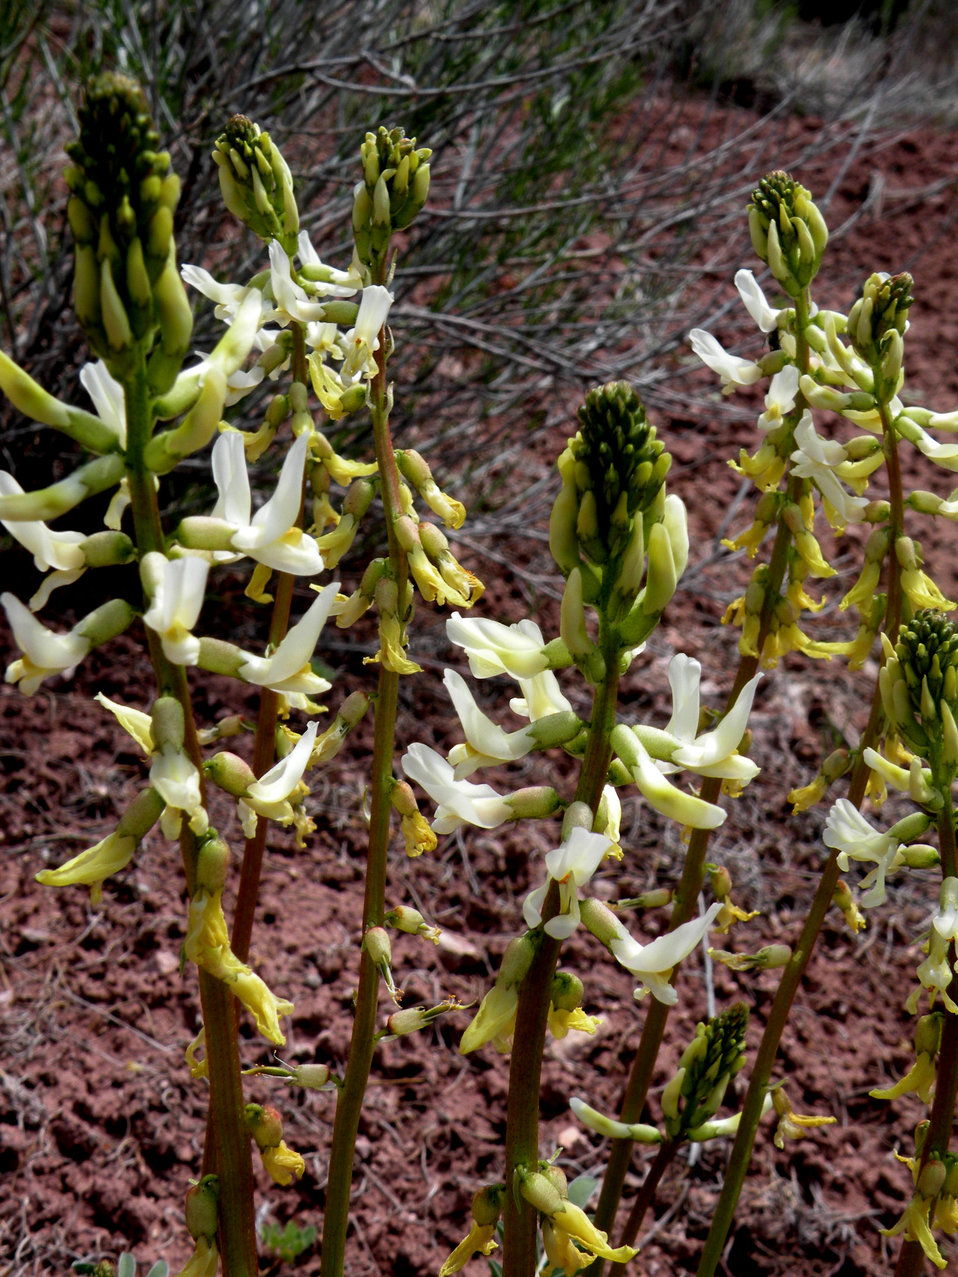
Shivwits milkvetch (Astragalus ampullarioides)

Shivwits milkvetch is a highly endemic perennial herb only known from a few populations in Washington County in southwestern Utah. It is restricted to soils derived from the Chinle Formation. It was listed endangered in 2001.